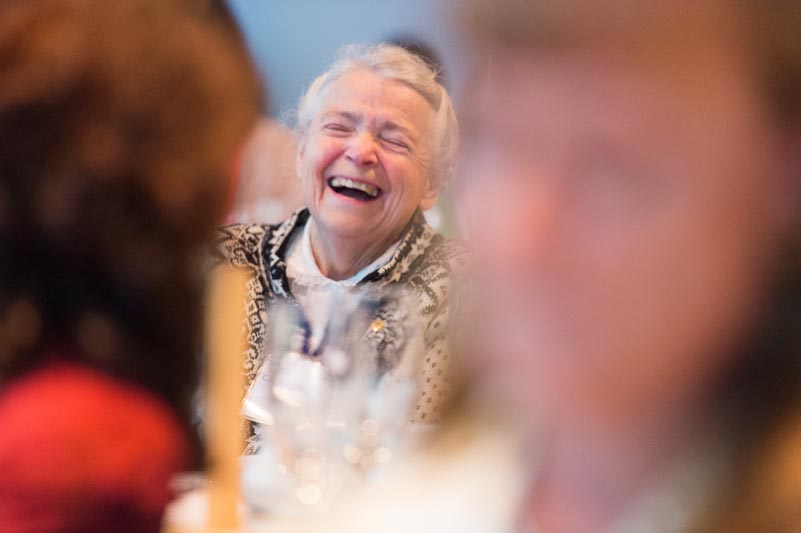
Millie Dresselhaus